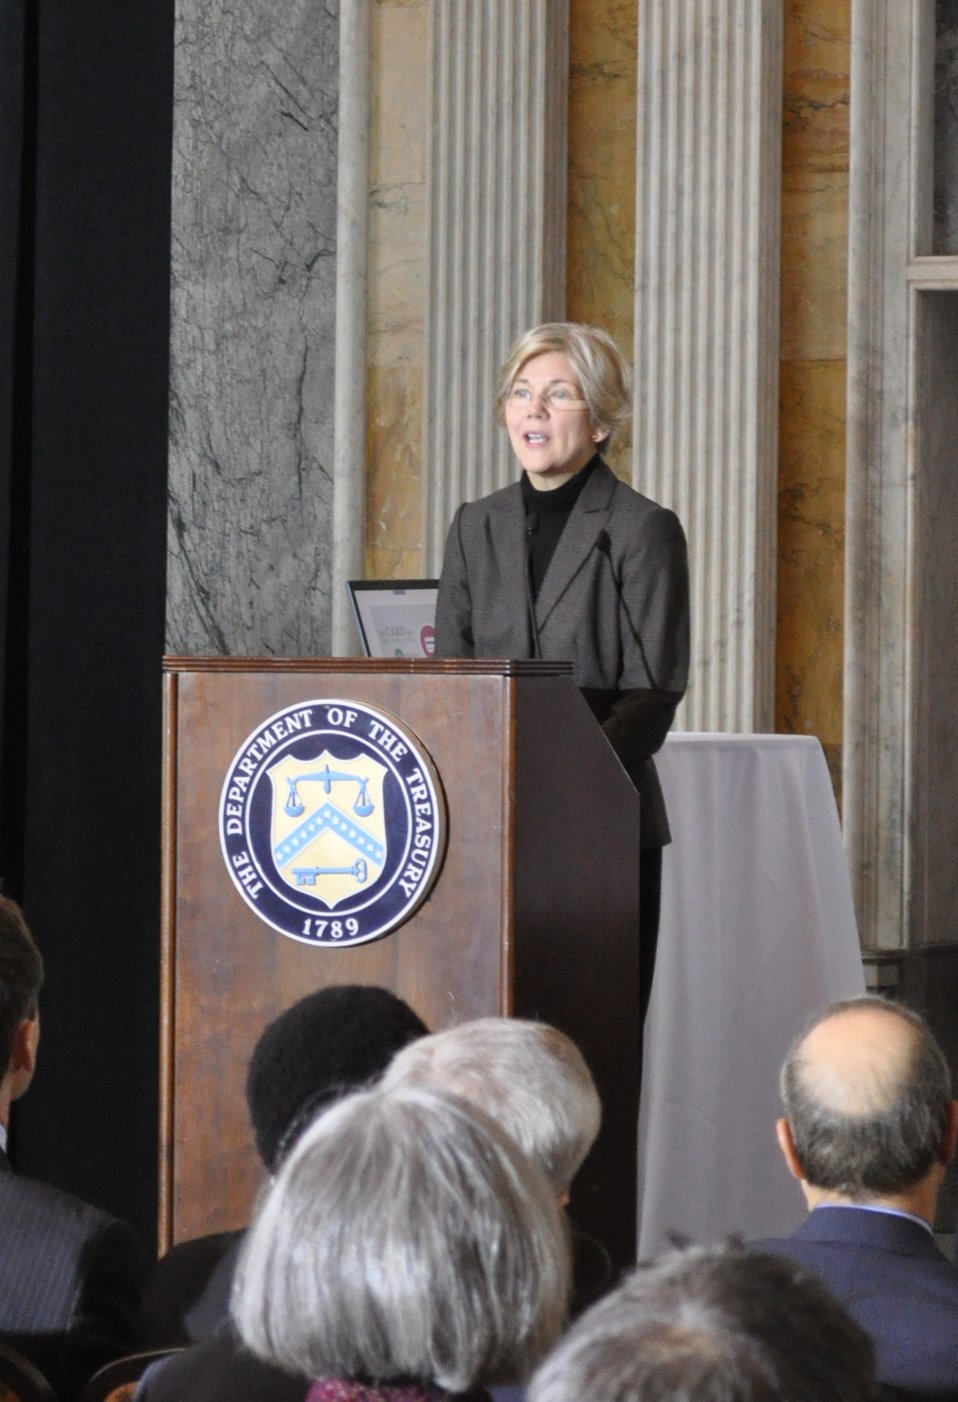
CFPB Conference on the Credit Card Act, 02/22/2011

Elizabeth Warren, Assistant to the President and Special Advisor to the Secretary of the Treasury on the CFPB, opened the conference with a keynote address recognizing the one-year anniversary of the effective date of many of the most significant provisions of the Credit CARD Act, and outlining the CFPB’s priorities for making the credit card market work better for consumers.